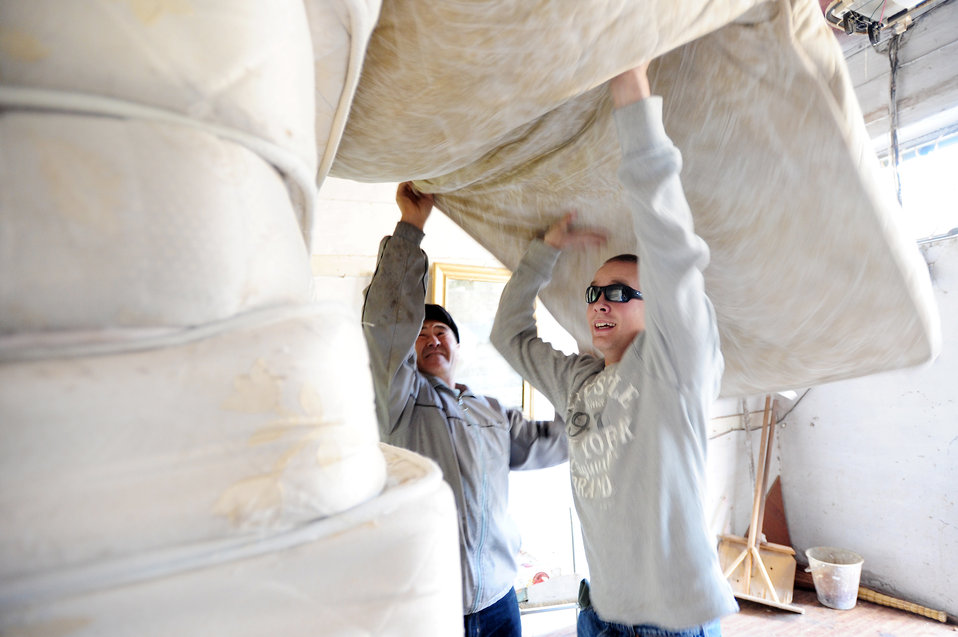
Manas Airmen donate necessities to hospital, school in Kyrgyzstan

Airman 1st Class Kevin Kotrola stacks mattresses at the Bishkek Center for Mental Health Oct. 31, 2009, at Bishkek, Kyrgyzstan. Airmen stationed at the Transit Center at Manas delivered 300 mattresses and 240 bed frames to the needy hospital. Airman Kotrola is a 376th Expeditionary Logistics Readiness Squadron vehicle maintenance technician deployed from Royal Air Force Lakenheath, England. He is originally from San Antonio.